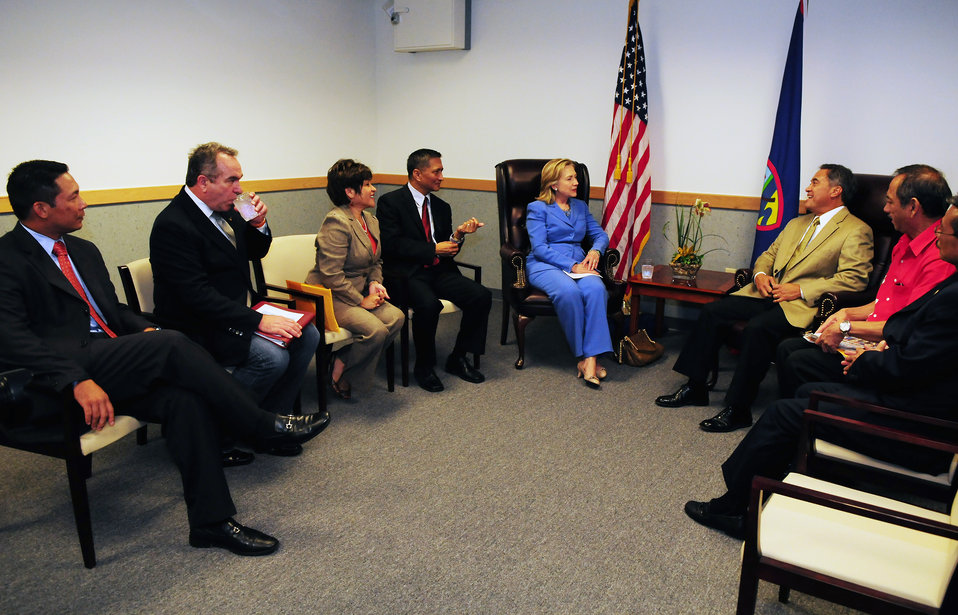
Secretary Clinton Meets With Government Officials in Guam

U.S. Secretary of State Hillary Rodham Clinton meets with government officials during an executive brief at Andersen Air Force Base in Guam on October 29, 2010.